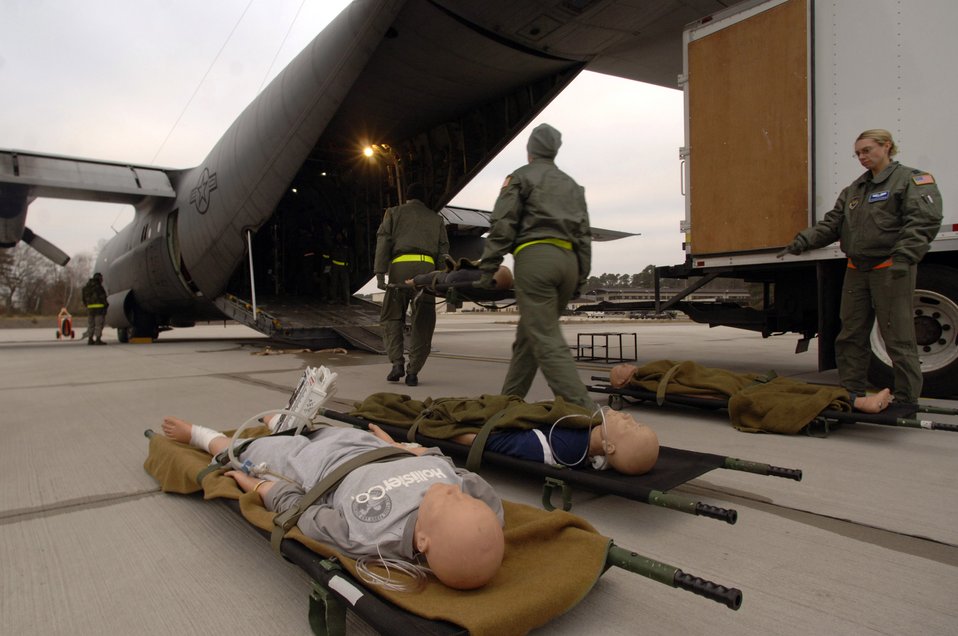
Medical professionals hone patient care skills

Flight nurses and medical technicians load 1,500 pounds of medical equipment and training mannequins into a C-130 Hercules shortly before takeoff on a weekly recurring training sortie for personnel assigned to the 86th Aeromedical Evacuation Squadron Feb. 19 at Ramstein Air Base, Germany. The flight-qualified healthcare providers fly with the 37th Airlift Squadron to remain proficient in their skills.